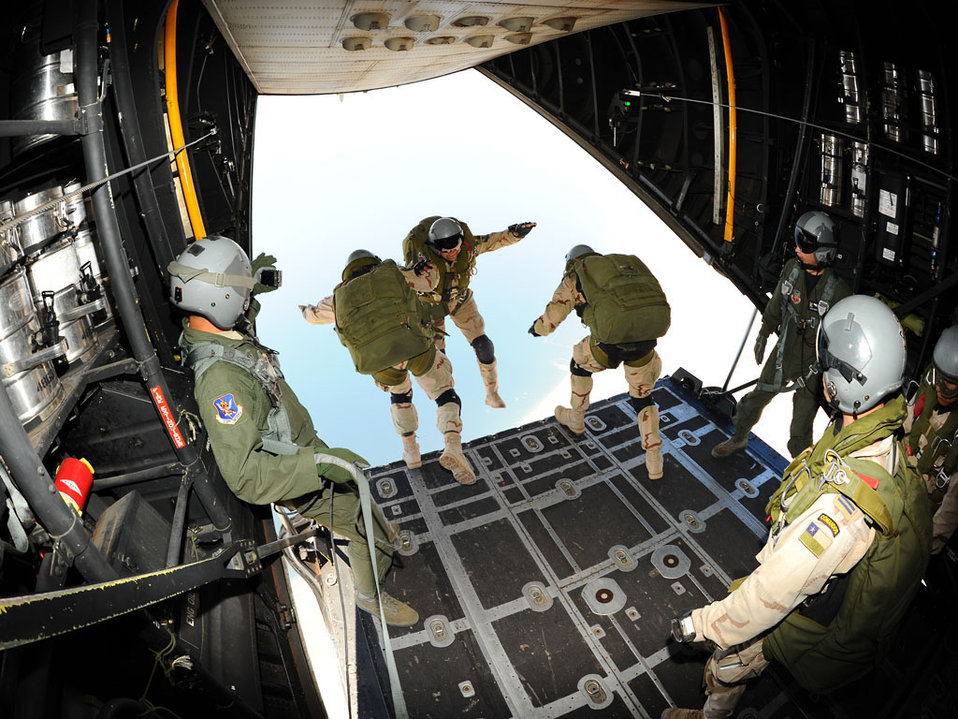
Airman culture key to Exercise Salitre success

Pararescue jumpers from the Chilean air force leap from a U.S. Air Force HC-130 during Exercise Salitre Oct. 22, 2009, over Chile. The multinational exercise focused on interoperability between Chile, the United States, Argentina, Brazil and France.